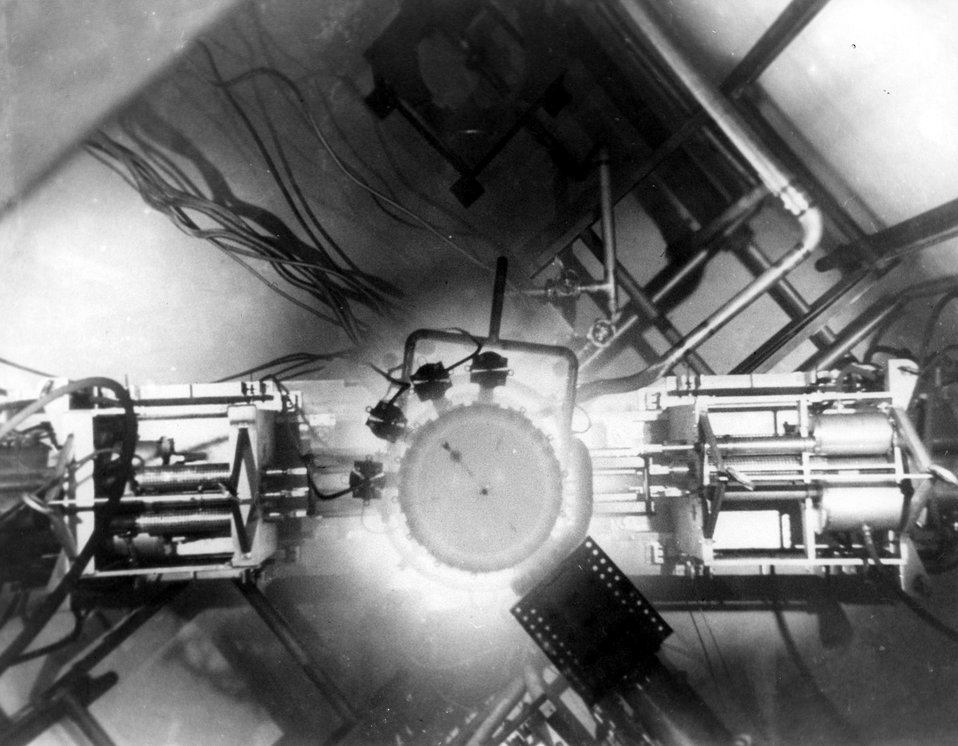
The Gas Cooled Reactor Experiment (GCRE) operating at full power of two thermal mega-watts at the Commission's National Reactor Testing Station in Idaho. Circa 1962.